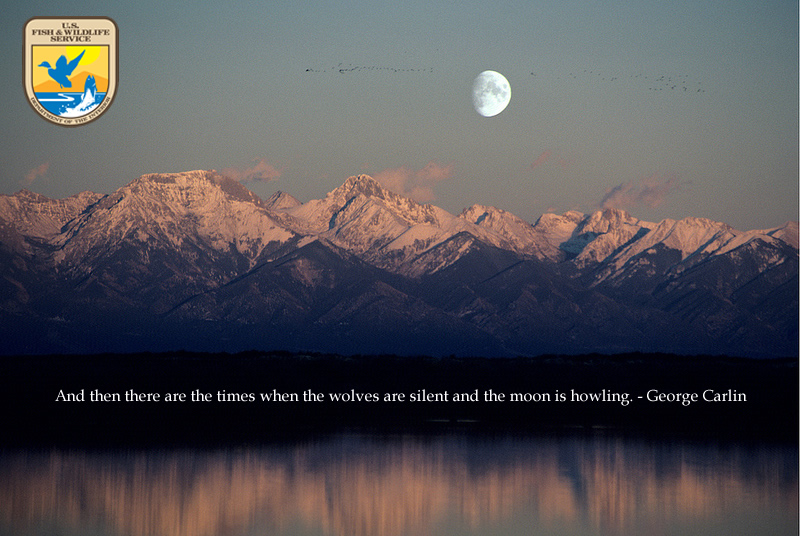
Howling Moon